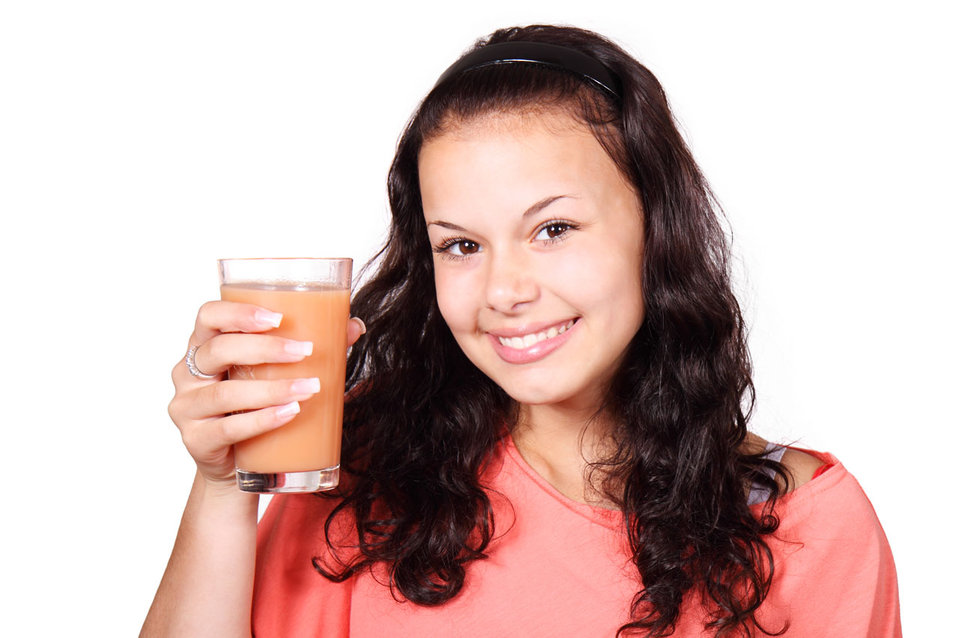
Woman with juice

Young woman with a glass of juice.